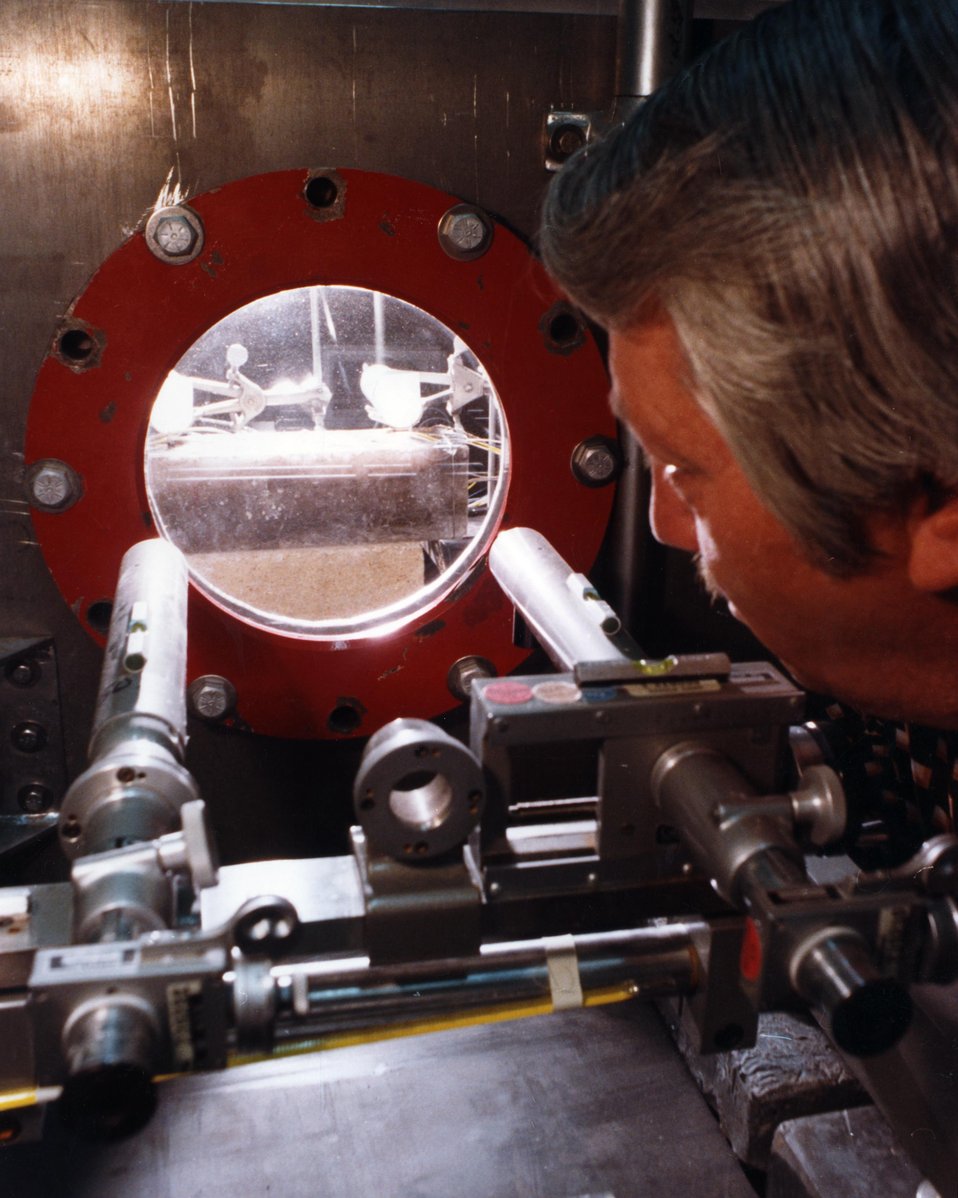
RESEARCHER IS PLACING ONE OF SEVERAL THERMOCOUPLES, HEAT MEASURING DEVICES, IN A CYLINDER OF BEDDED SALT.

THERMOCOUPLES ARE PLACED AT VARIOUS SPOTS ALONG THE SIDE OF THE FOUR AND ONE-HALF INCH DIAMETER CORE SAMPLE TO HELP DETERMINE HOW RAPIDLY HEAT TRAVELS THROUGH SALT. AFTER BEING INSTRUMENTED, THE BOTTOM OF THE SALT SAMPLE WAS HEATED TO A TEMPERATURE OF 700 DEGREES FAHRENHEIT. THESE TESTS PROVIDE INFORMATION NEEDED TO PERFORM COMPLEX CALCULATIONS OF SALT BEHAVIOR.